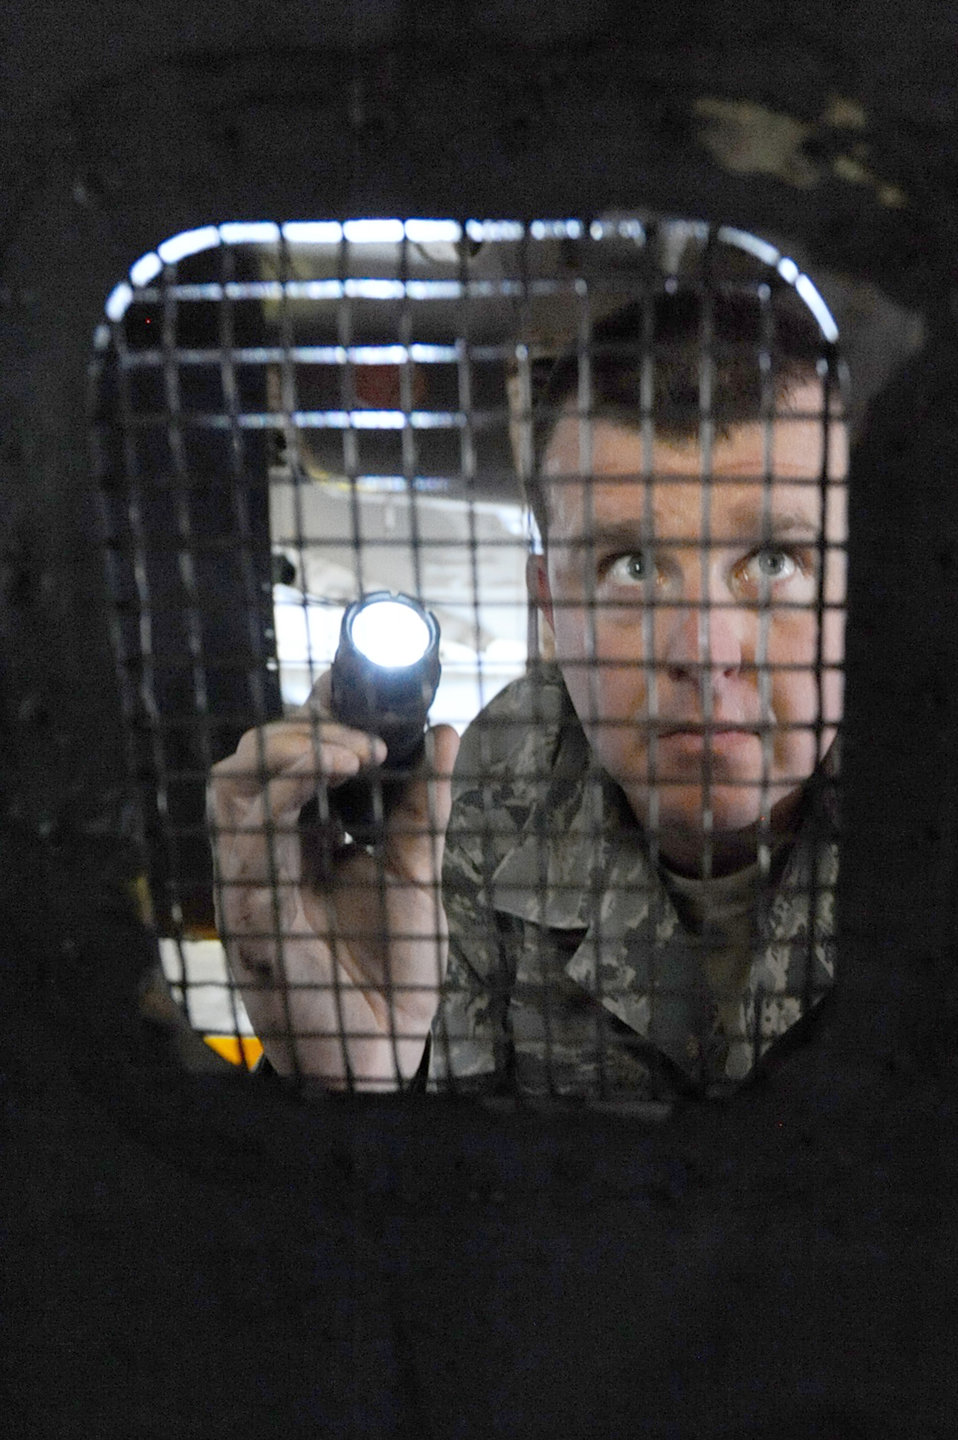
All is okay here

Staff Sgt. Daniel Rice, 28th Maintenance Group quality assurance inspector, examines an accessory drive system bay panel on a B-1B Lancer at Ellsworth Air Force Base, S.D., Sept. 9, 2010. Sergeant Rice conducts the inspection as part of the home station follow-up inspection.